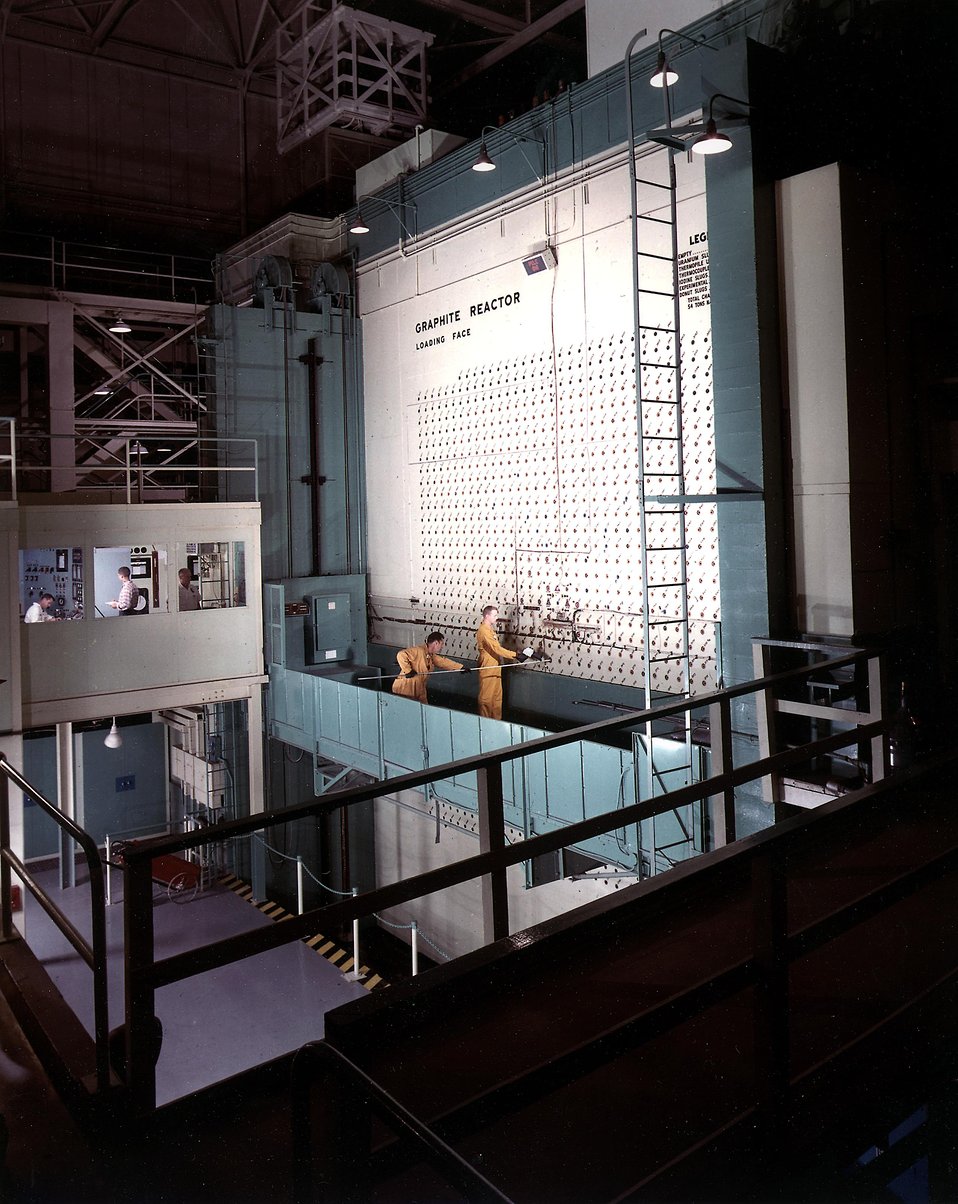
The world's first large-scale nuclear reactor went into operation on November 4, 1943, at what is now the Atomic Energy Commission's Oak Ridge (Tenn.) National Laboratory.